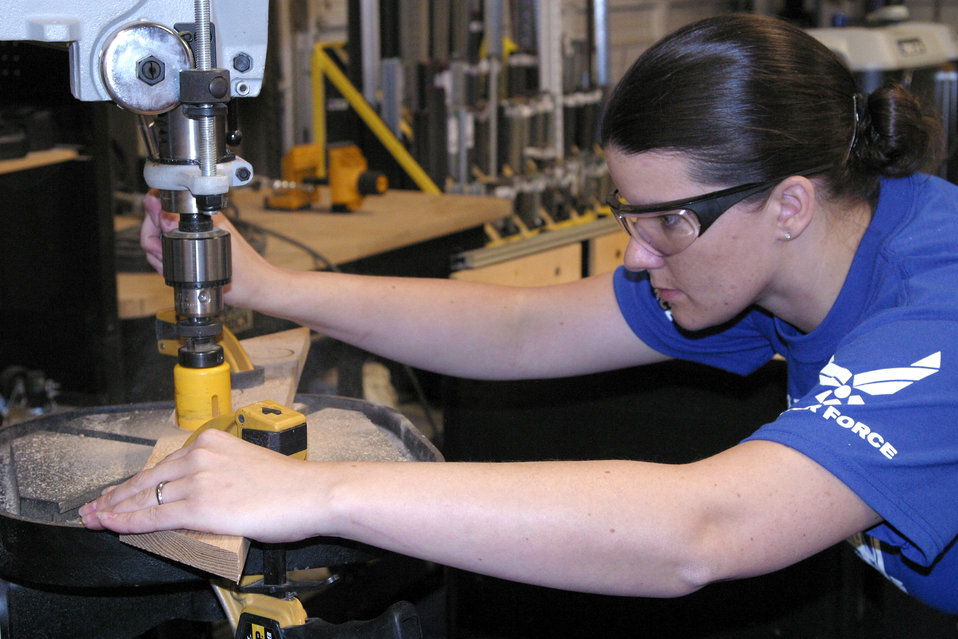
Watt

KNOXVILLE, Tenn. -- Senior Airman Nicole Watt, an oboe player assigned to the U.S. Air Force Band of the Golden West, Travis Air Force Base, Calif., uses a hole saw to cut out spaces that were used to display unit coins. The Band of the Golden West and the U.S. Air Force Band of Mid-America, Scott AFB, Ill., each sent a three-person here, April 4 to participate in the Do-It-Yourself Network television show, Warehouse Warriors.